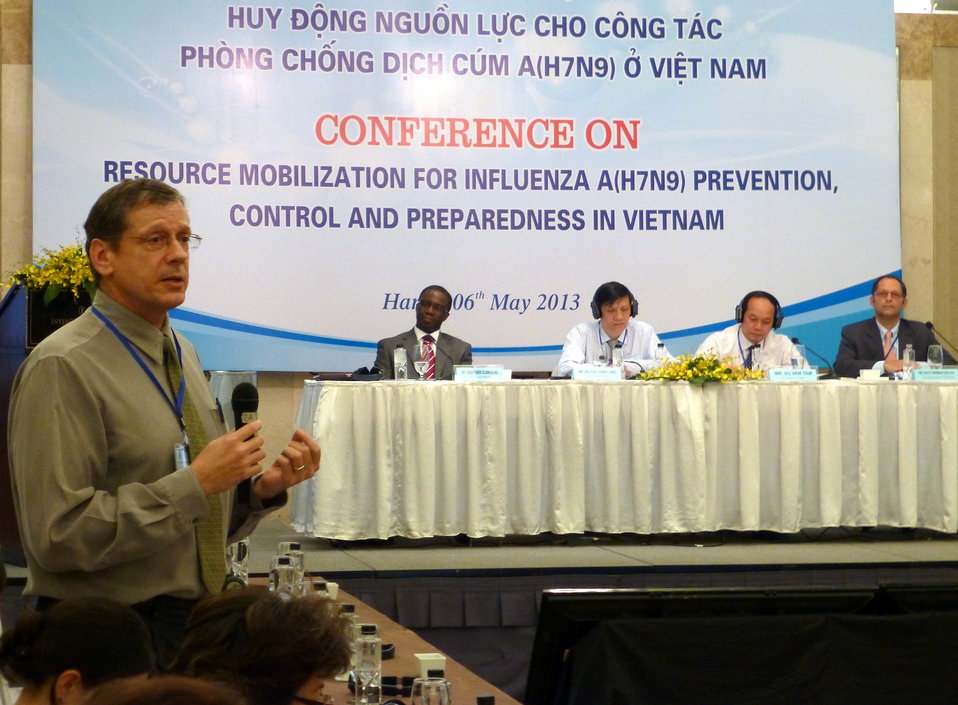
Dr. Tim Meinke, USAID, speaks at the Conference on Resource Mobilization for Influenza A (H7N9) Prevention, Control and Preparedness in Vietnamce on Resource Mobilization for Influenza A (H7N9) Prevention, Control and Preparedness in Vietnam

Hanoi, May 6, 2013
Supported by USAID Vietnam